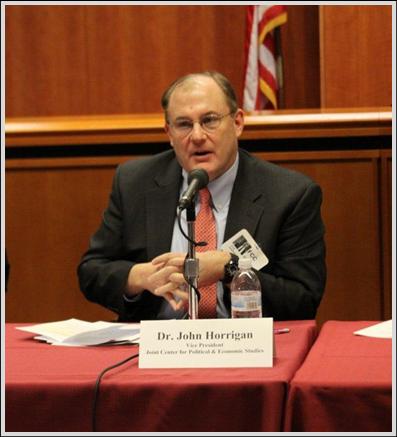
Dr. John Horrigan

Panel 1: What have we Learned from Academic Studies on How to Close the Broadband Adoption Gap